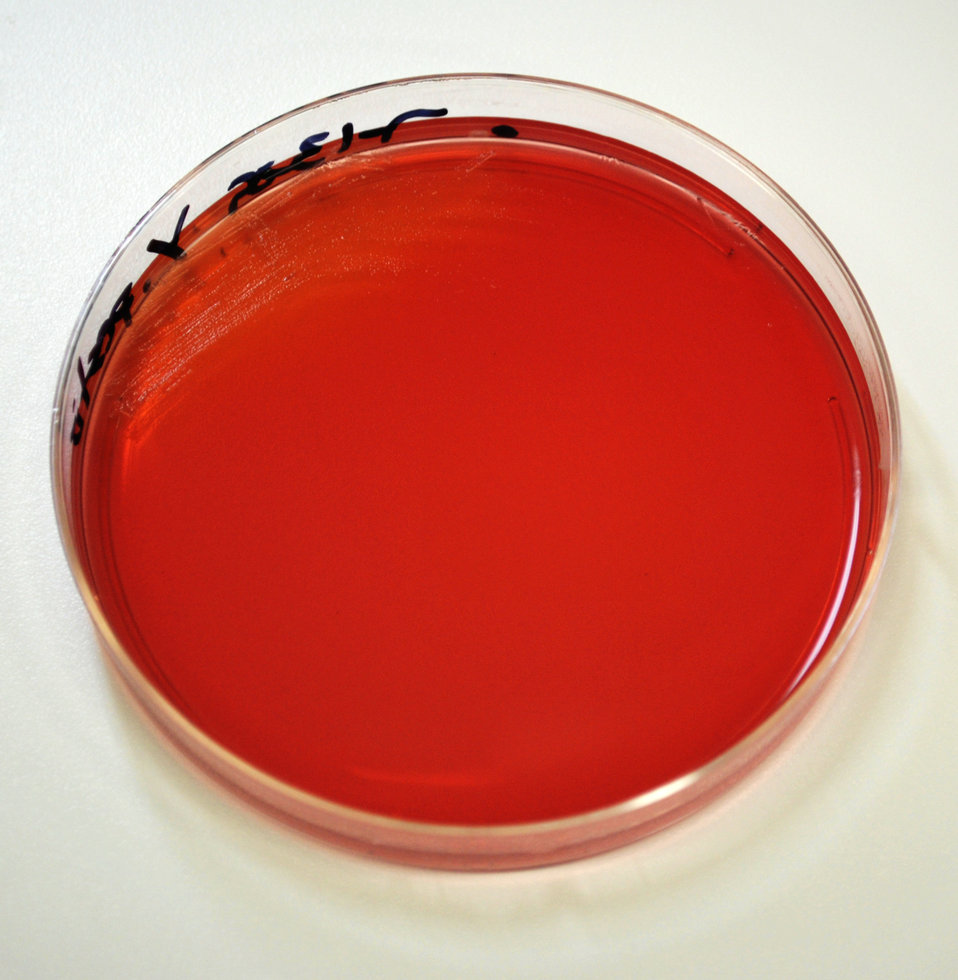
This image depicts a Petri dish containing a MacConkey agar medium, which had been inoculated with Gram-negative Yersinia pestis bacteria. Y. pestis is the pathogen responsible for causing human plague. This was the appearance of the colonial growth after 24 hours of incubation.